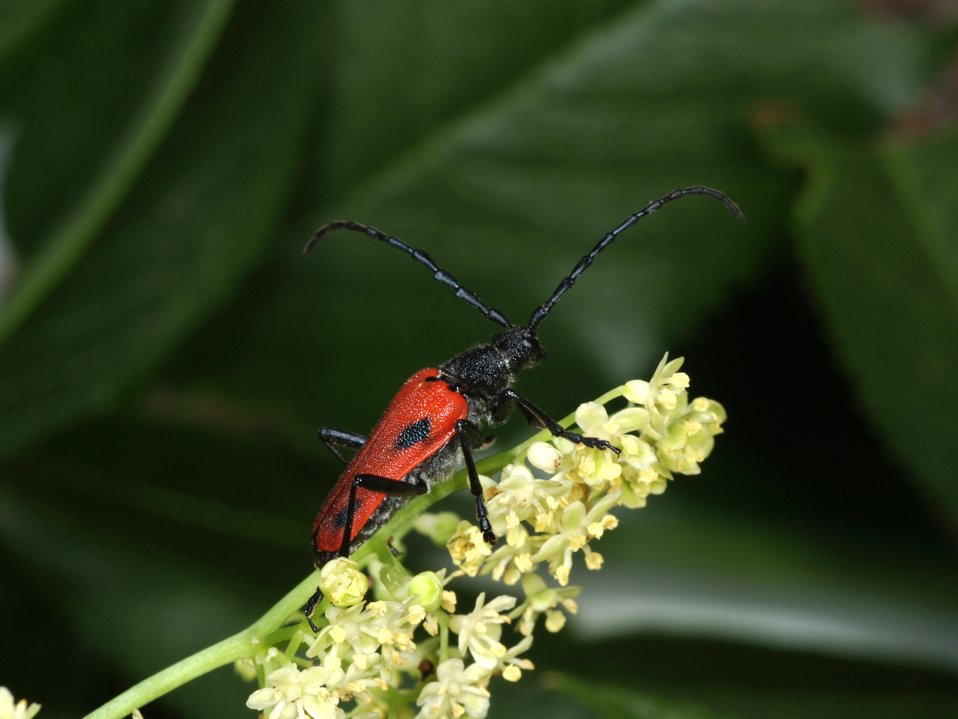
Valley Elderberry Longhorned Beetle male

The Valley Elderberry Longhorned beetle, an endangered species, spend most of their lives as larvae inside the stems of the bushes, emerging as adults between March and June to lay their eggs on nearby elderberries. The insects eat elderberry nectar, flowers and leaves.